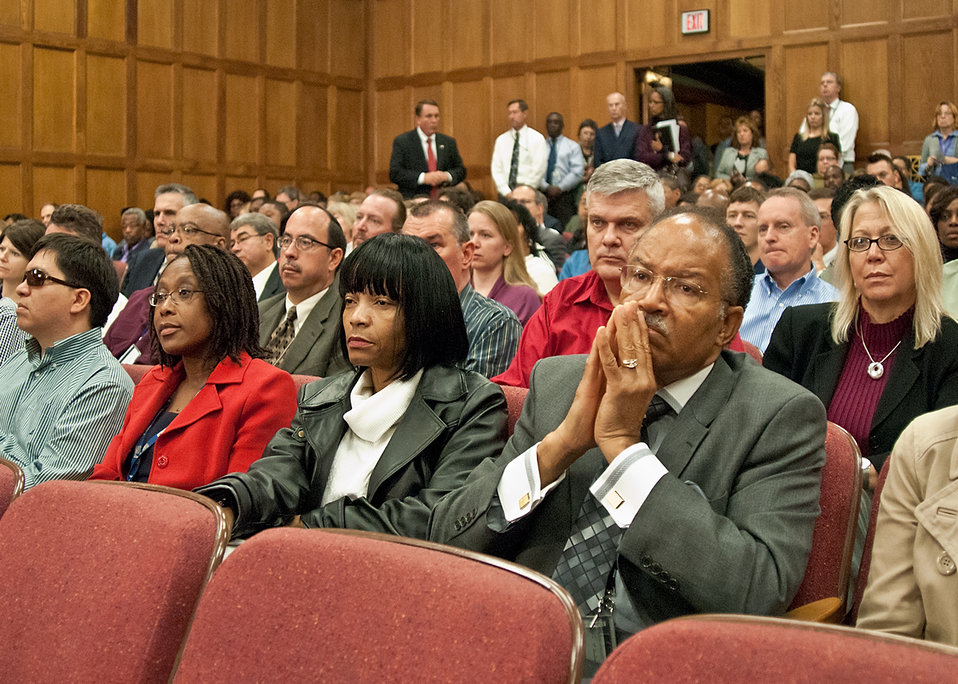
U.S. Department of Agriculture employees listen to Agriculture Secretary Tom Vilsack during the Cultural Transformation Recognition Ceremony at the Jefferson Auditorium, US Department of Agriculture in Washington, DC, on Tuesday, October 4, 2011. Cultural Transformation is the process of creating a workplace where all employees and customers are treated with dignity, respect and the opportunity for success. Recognizing the important contributions of all employees to the operation of the United States Department of Agriculture. The goal of cultural transformation is to get everyone at USDA – from the Under Secretaries to employees at every grade level, in every location - to ensure USDA is a place where there’s opportunity for all to reach their full potential. Only then can USDA provide its customers with exceptional service in an equitable manner.